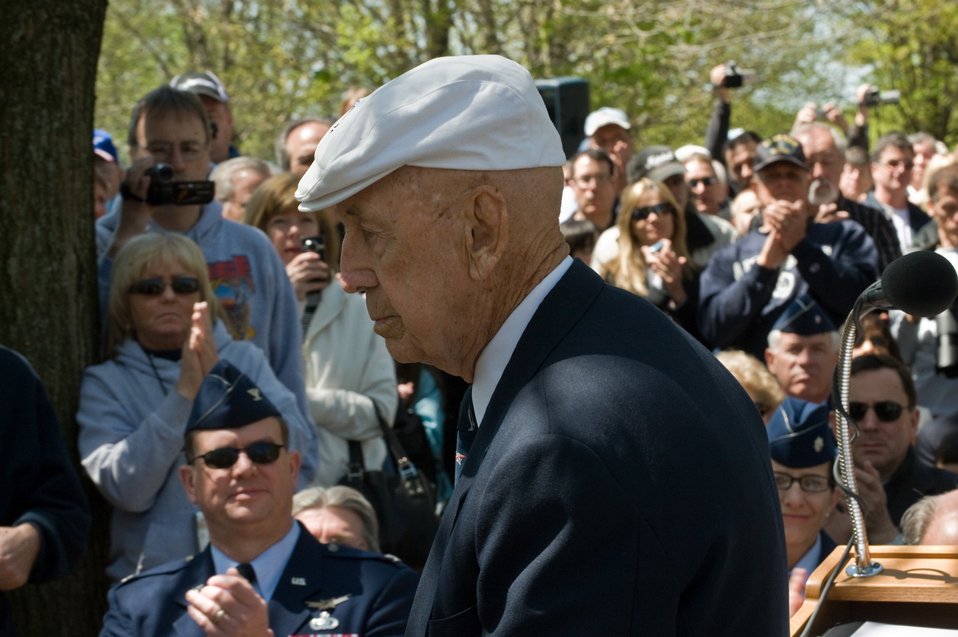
Doolittle Raiders Memorial Service

Lt. Col. Richard Cole was applauded after speaking at the memorial service during the Doolittle Raiders Reunion, hosted by the National Museum of the U.S. Air Force at Wright-Patterson Air Force Base, Ohio on April 18, 2010.